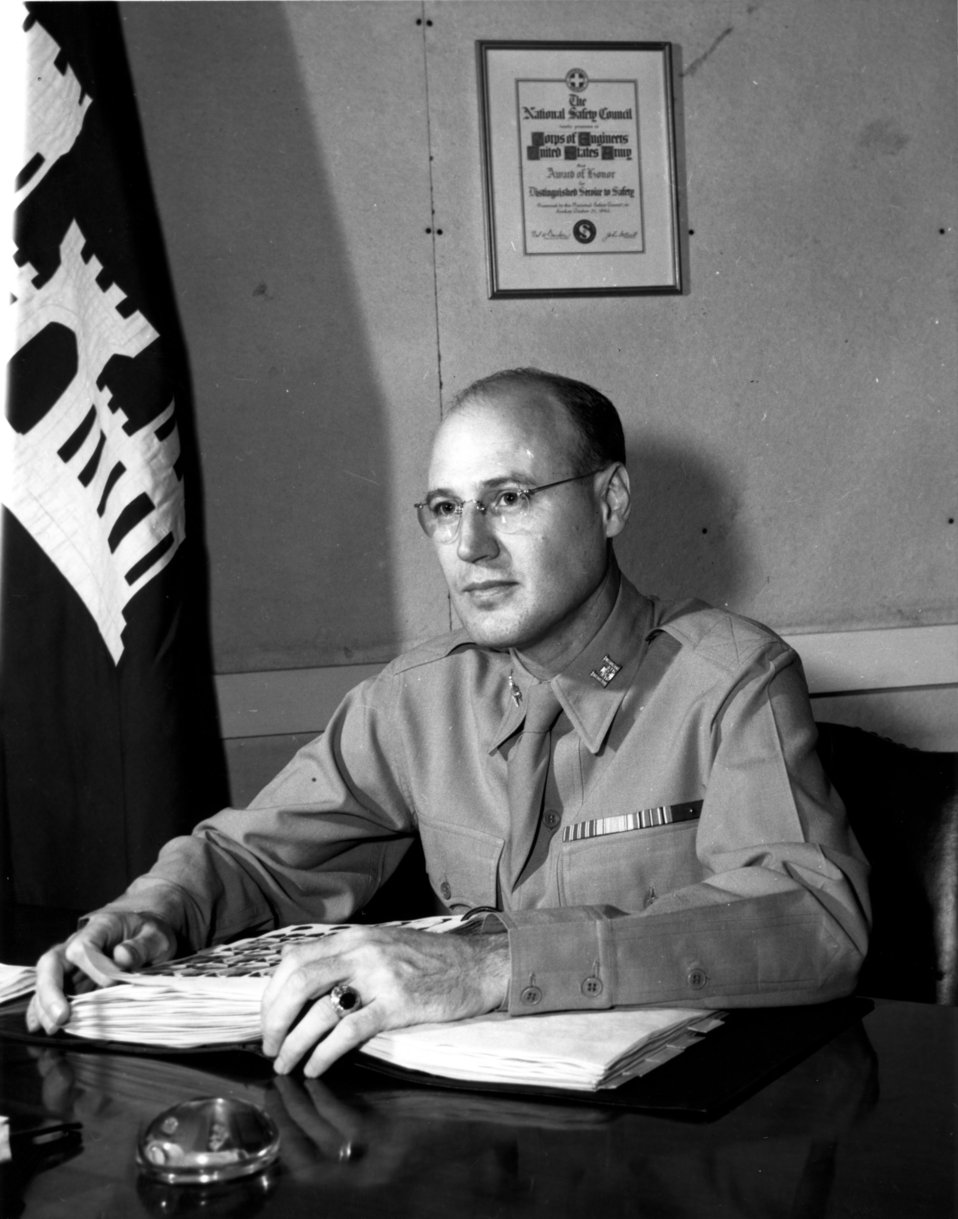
Notable persons at Oak Ridge